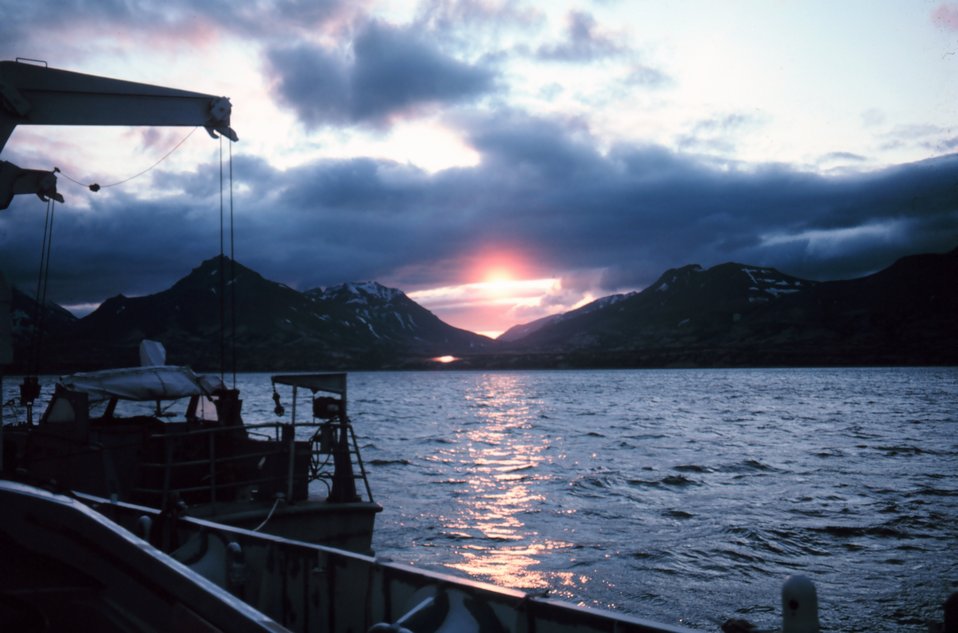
Survey launch on FAIRWEATHER at sunset while anchored in Wide Bay.